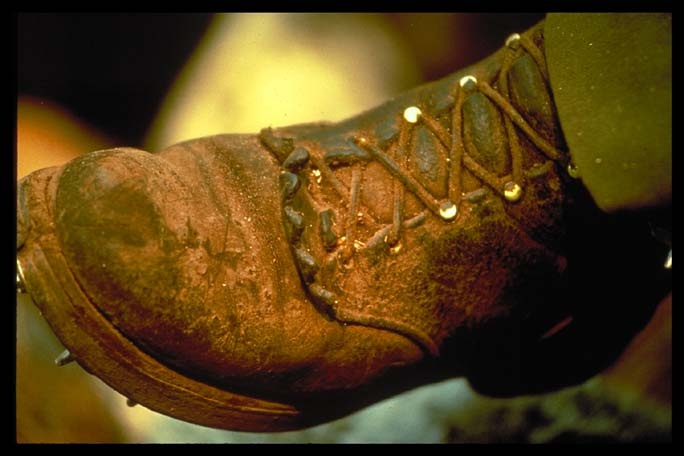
Wildland firefighter